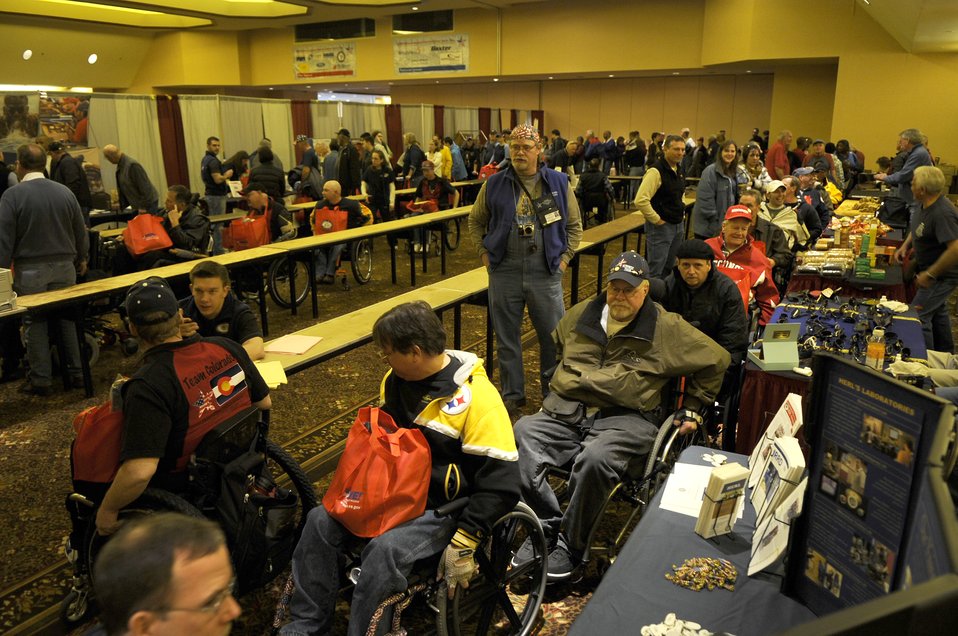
Winter rehabilitation clinic shows veterans potential

Participants line up inside The Silver Tree Hotel March 29 to register for the 23rd National Disabled American Veterans Winter Sports Clinic in Snowmass Village, Colo. The event is sponsored by the Department of Veterans Affairs and Disabled American Veterans.